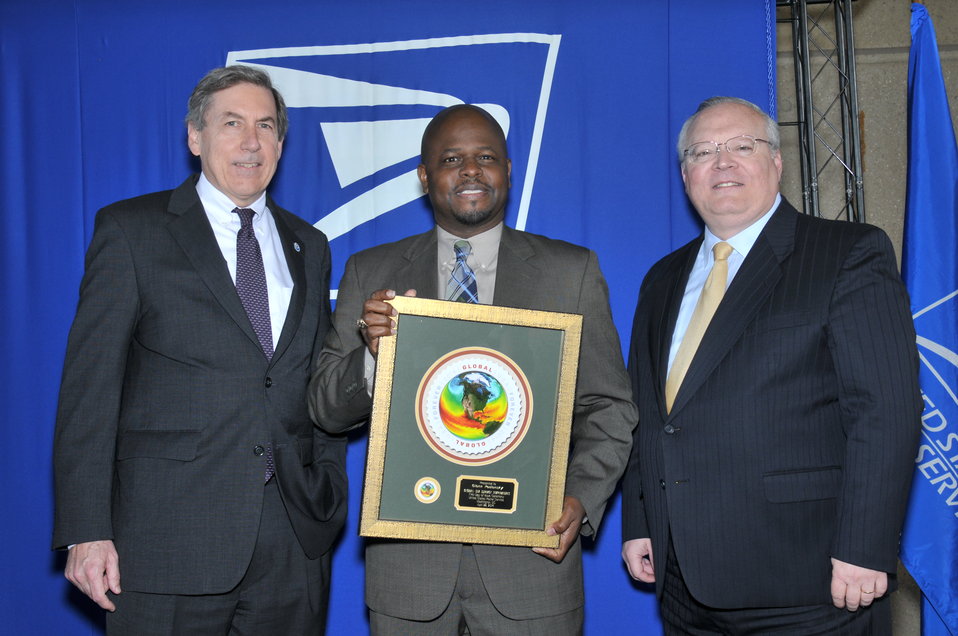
U.S Postal Services introduces a new Global: Sea Surface temperatures forever stamp at the Earth Day program at Department of Energy on April 22, 2014. ( T.Day, C.Williams, C.Anderson II, J.Colin Ph.D, Dr. K. Sullivan, K.Tobin Ph.D, W. Gicher Jr)